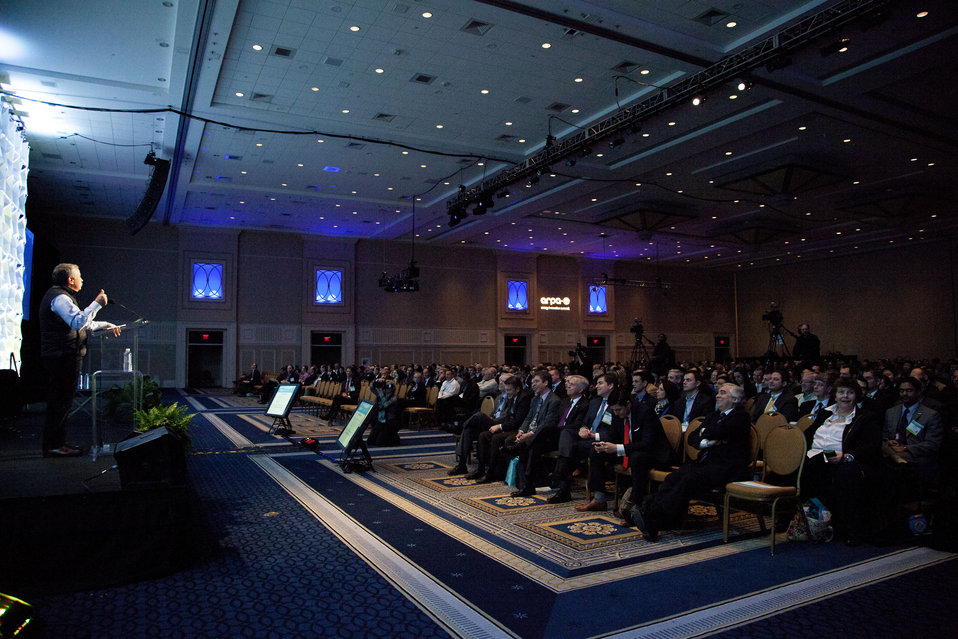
ARPA-E works to advance high-potential, high-impact technologies that have not yet received private sector investment, and its Energy Innovation Summit is dedicated to innovative energy solutions that could transform energy generations, storage and use as we know it. In this photo, Thomas Friedman delivers his keynote speech to the Summit’s 2,000 attendees.